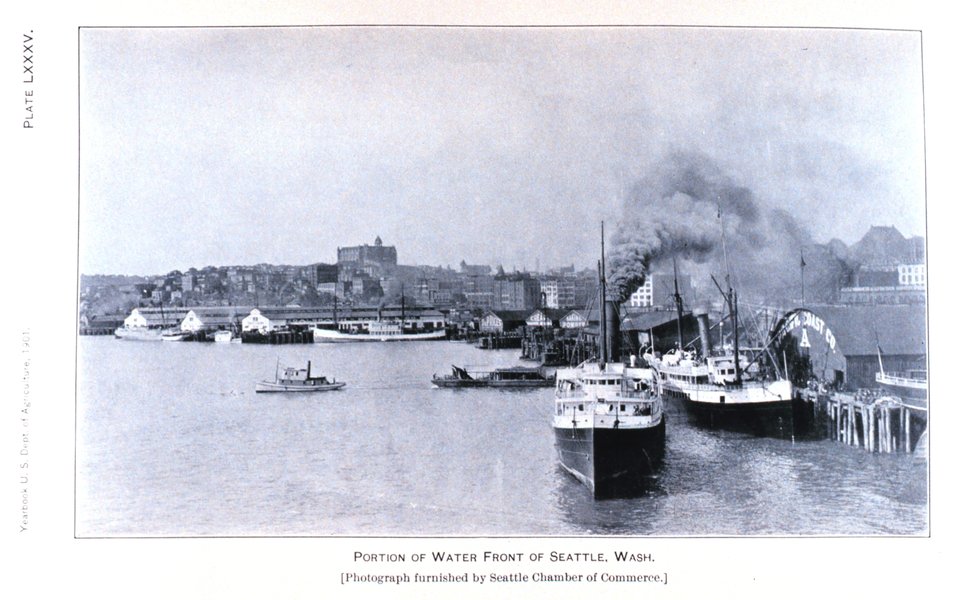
Seattle, Washington, waterfront. In:'Wheat Ports of the Pacific Coast' by Edwin S. Holmes, Jr. Published in: Yearbook of the United States Department of Agric ulture 1901. Plate LXXXV, p. 572. Library Call Number S21 .A2 .